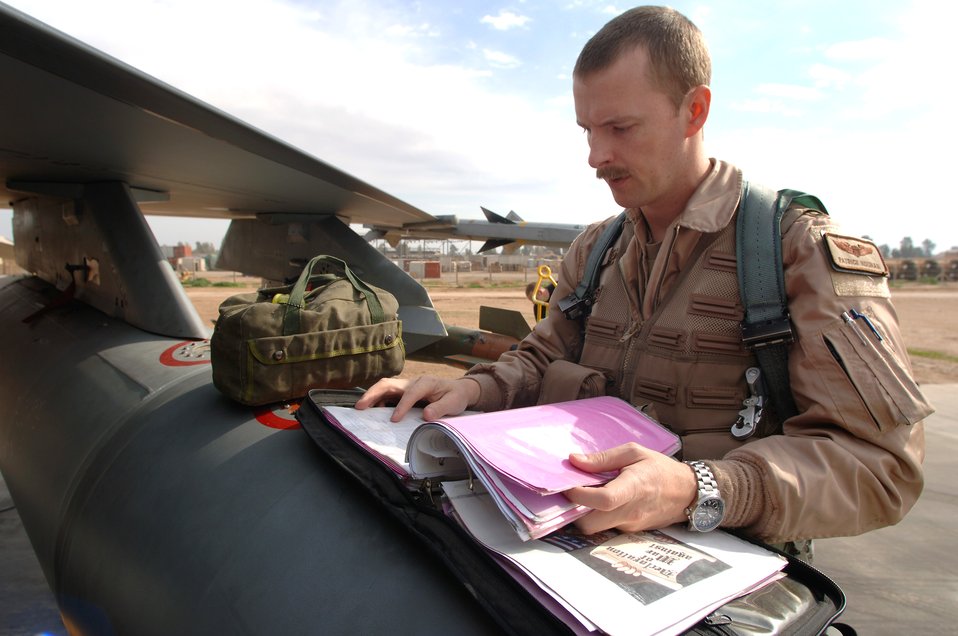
Falcons ready to leave the nest

Capt. Patrick Noonan goes over a pre-flight checklist before departing in an F-16 Fighting Falcon on a Operation Iraqi Freedom mission Feb. 13 from Balad Air Base, Iraq. Captain Noonan is deployed to the 510th Expeditionary Fighter Squadron from Aviano Air Base, Italy. These missions involve flying close-air support to support coalition troops, infrastructure protection, reconstruction activities and operations to deter and disrupt terrorist activities.